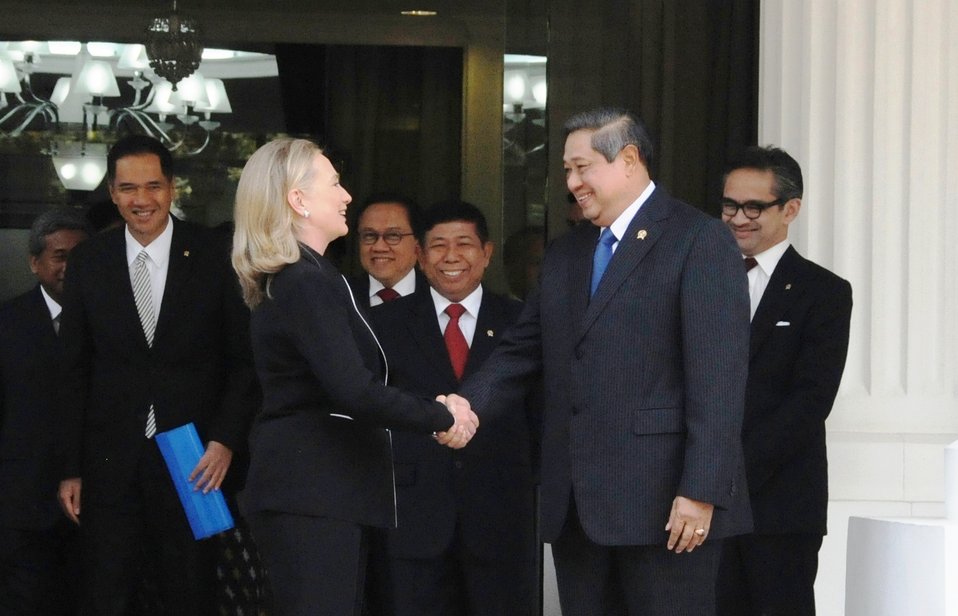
Secretary Clinton Shakes Hands With Indonesian President Yudhoyono

U.S. Secretary of State Hillary Rodham Clinton shakes hands with Indonesian President Susilo Bambang Yudhoyono before their bilateral meeting in Jakarta, Indonesia, September 4, 2012.